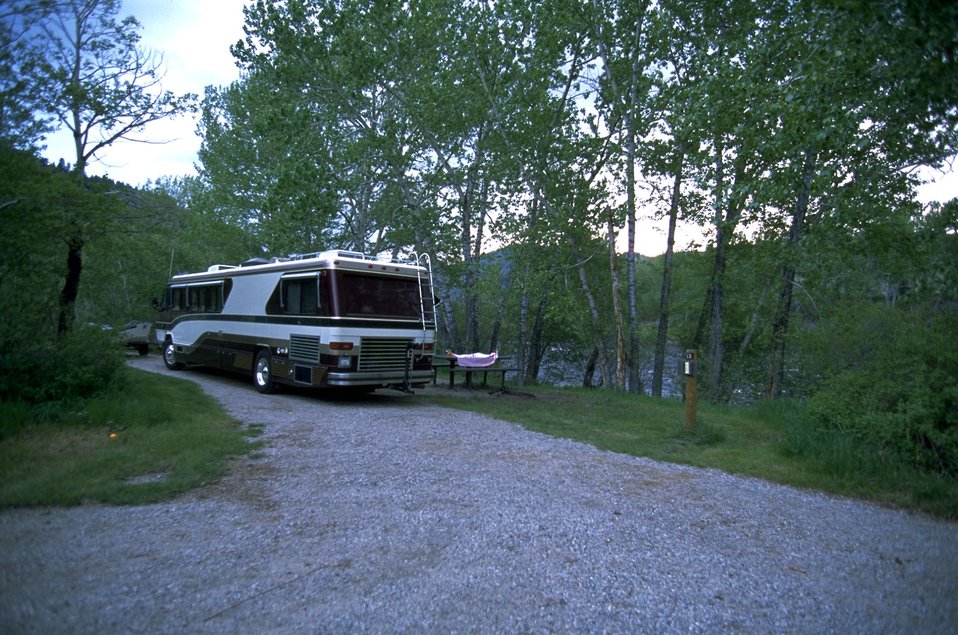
Large recreational vehicle at Divide Campground